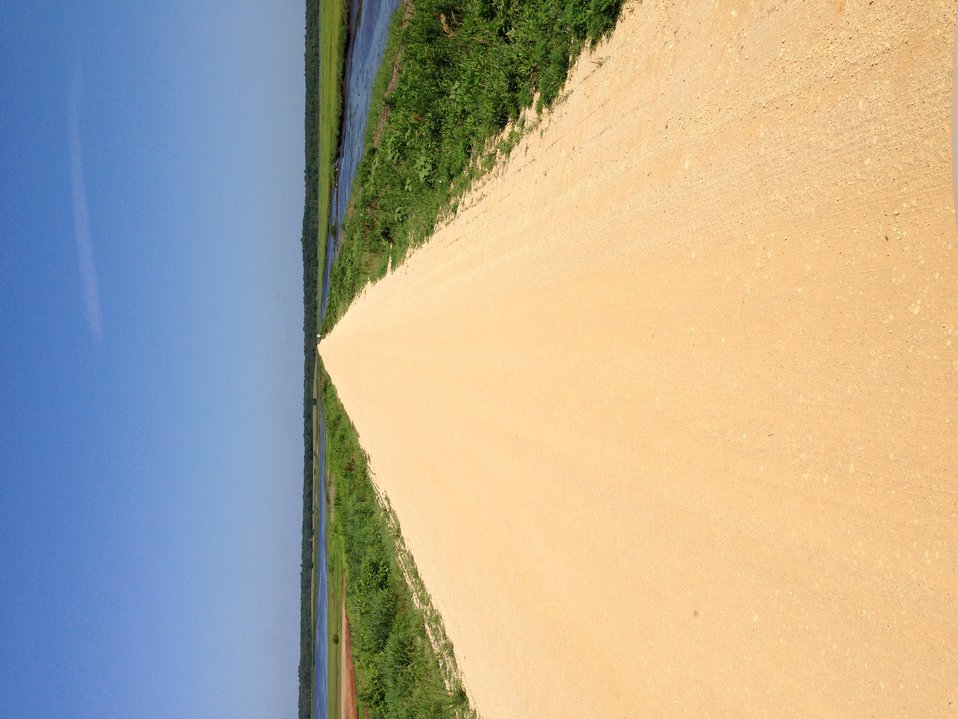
Forsythe wildlife drive after hurricane repairs

North dike looking west.